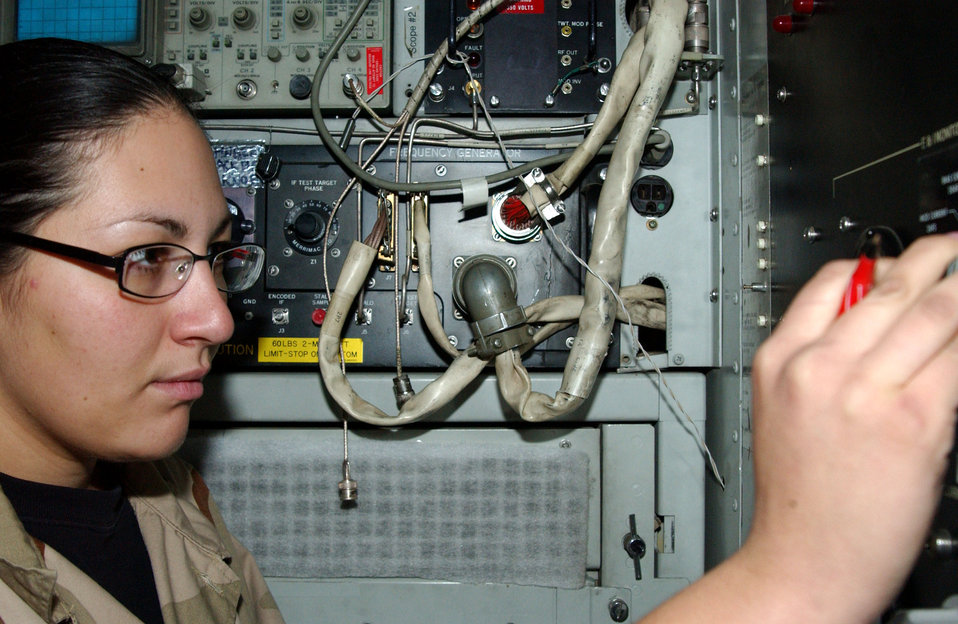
Ground radar techs enable control of tactical air battlespace

Senior Airman Adrienne Samora conducts a daily preventative maintenance inspection Dec. 19 on one of the ground radar systems at Balad Air Base, Iraq. Airman Samora, a 727th Expeditionary Air Control Squadron radar maintenance technician, is deployed from Mountain Home Air Force Base, Idaho.